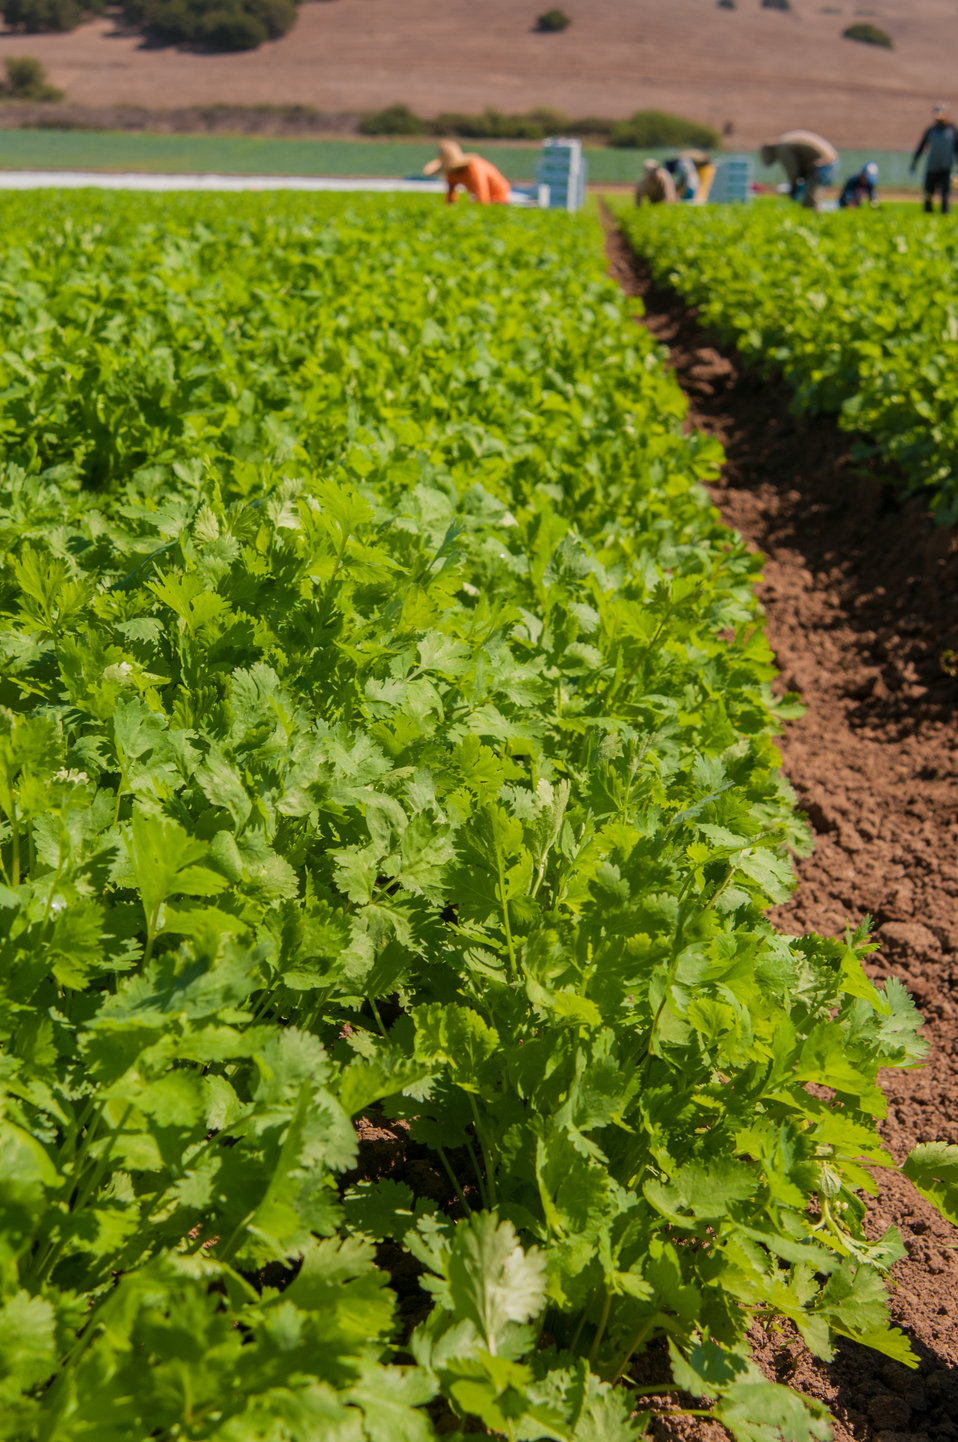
Migrant workers harvest Lettuce at Lakeside Organic Gardens in Watsonville, CA on Tuesday, Aug. 27, 2013.